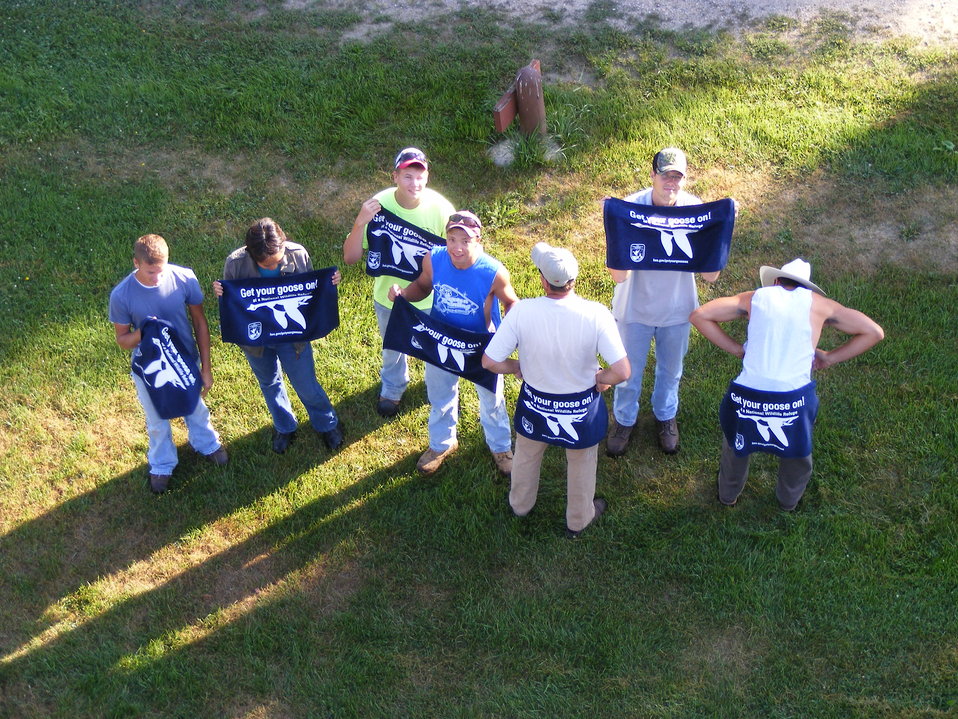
Get Your Goose On!

The Waubay National Wildlife Refuge summer crew poses for the camera.